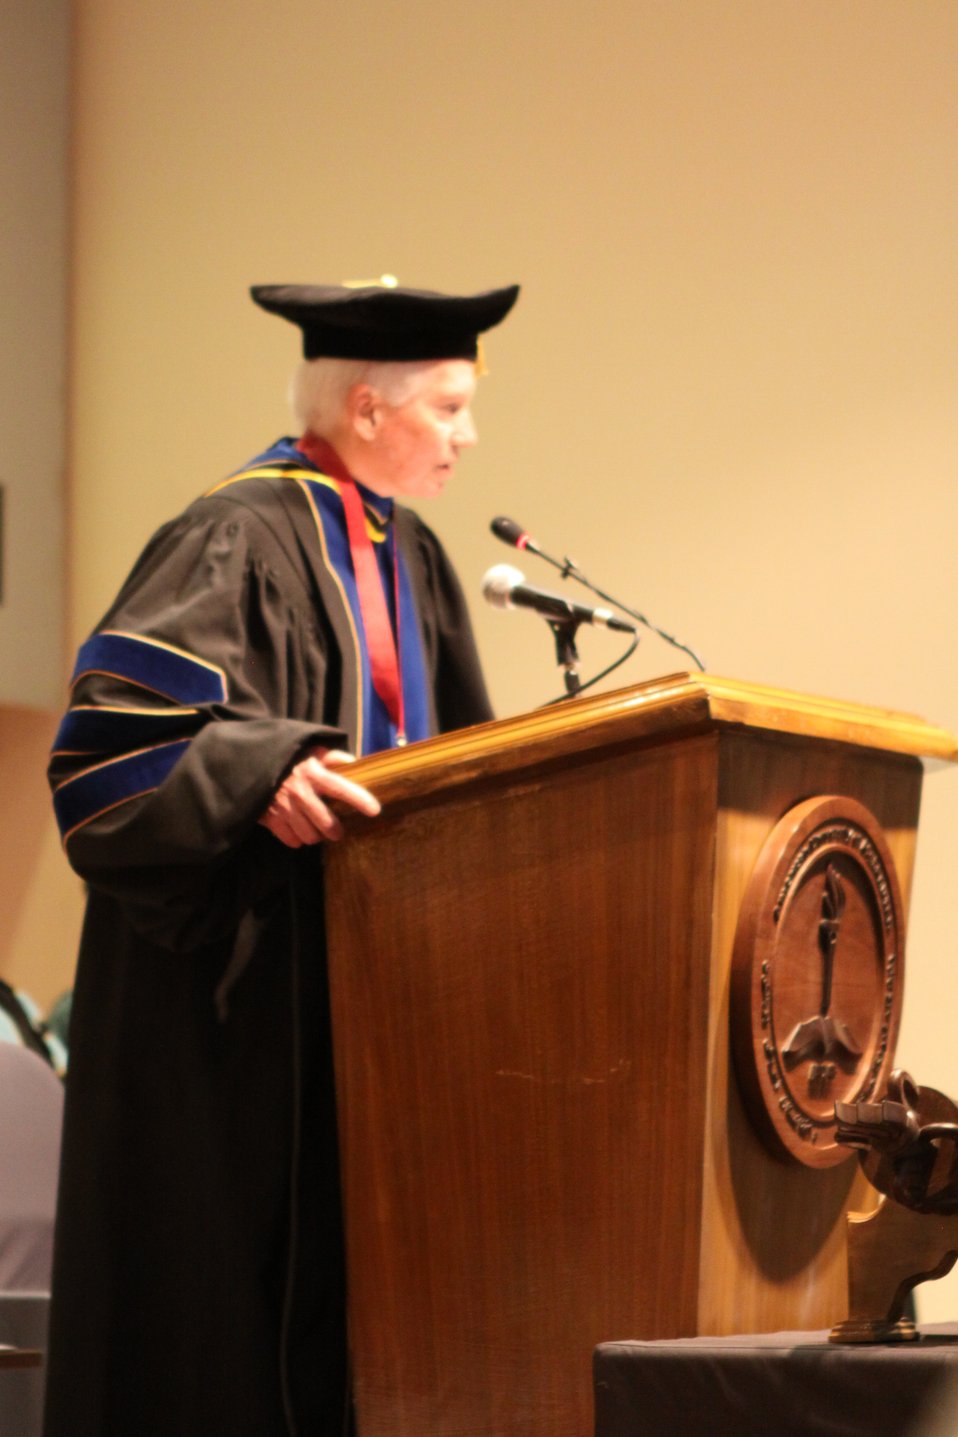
100526 AUAF Graduation 182